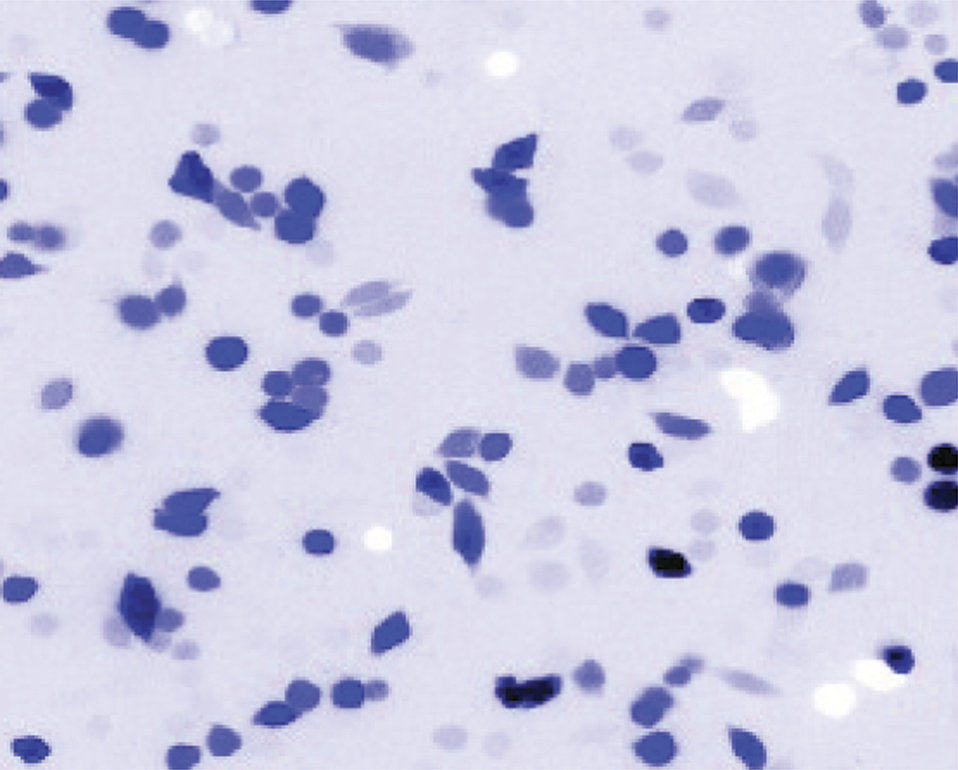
Human Cells

Micrograph of human cells modified to act as metal sensors. Researchers at JILA built hardware to help time the dynamic states of these sensors, which change fluorescence color when they bind metal ions. The cells are false-colored to indicate the extent of their reactions; the darker cells have bound the most metal ions.